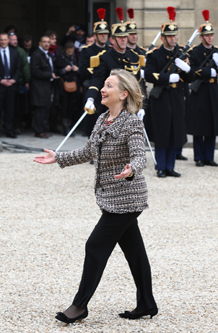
Secretary Clinton Arrives at the Elysee Palace

U.S Secretary of State Hillary Rodham Clinton arrives at the Elysee Palace for a Crisis summit on Libya in Paris, France, on March, 19, 2011.